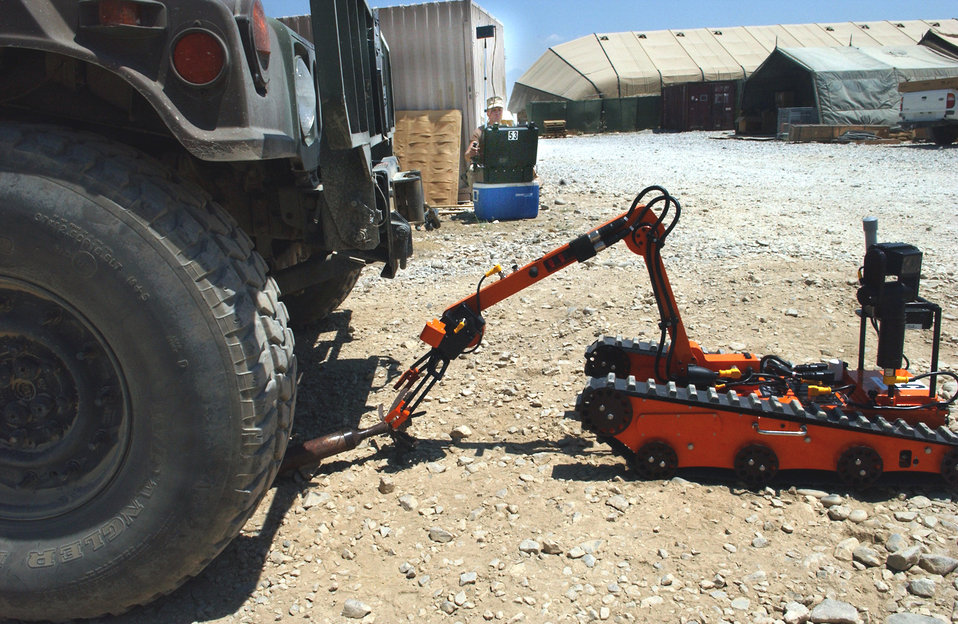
EOD is making Afghanistan safe for future

BAGRAM AIR BASE, Afghanistan --